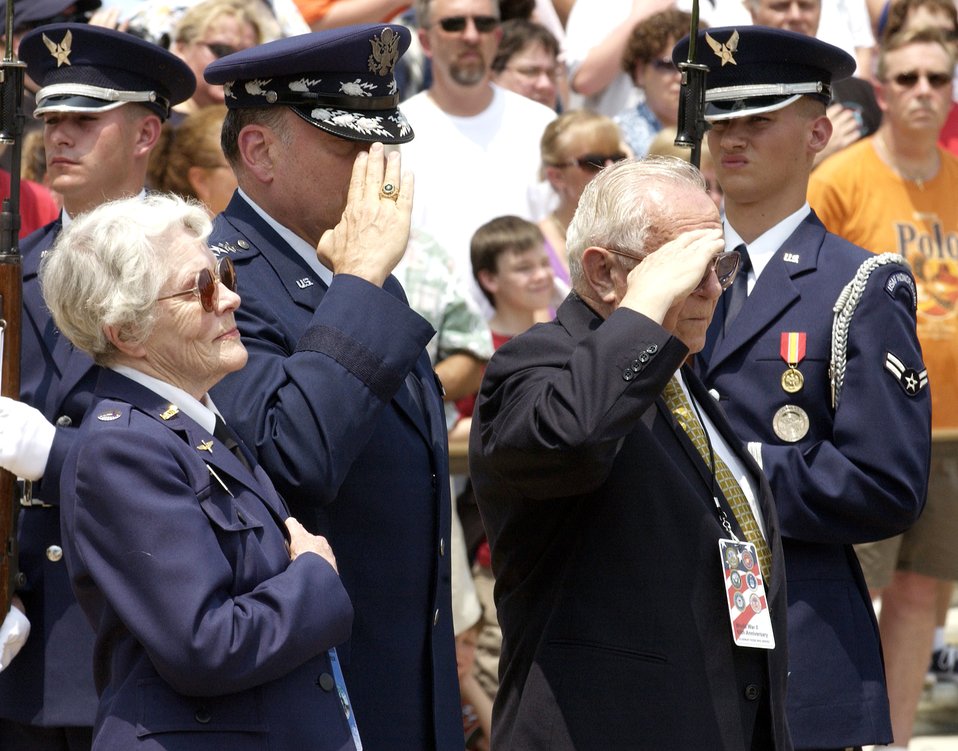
WWII 60th Anniversary Airpower Commemoration Wreath Laying ceremony

WASHINGTON -- Ms. Toby Felker (left), Air Force Chief Of Staff Gen. John P. Jumper, and retired Air Force Lt. Col. William Czabaranek render honors after placing a wreath at Arlington National Cemetery's Tomb of the Unknowns June 30 during a ceremony commemorating airpower and the 60th anniversary of World War II. Ms. Felker served as a Women's Airforce Service Pilot from September 1943 to December 1944. Colonel Czabaranek served as a bombardier during World War II. He survived being shot down during one of his many missions flying over